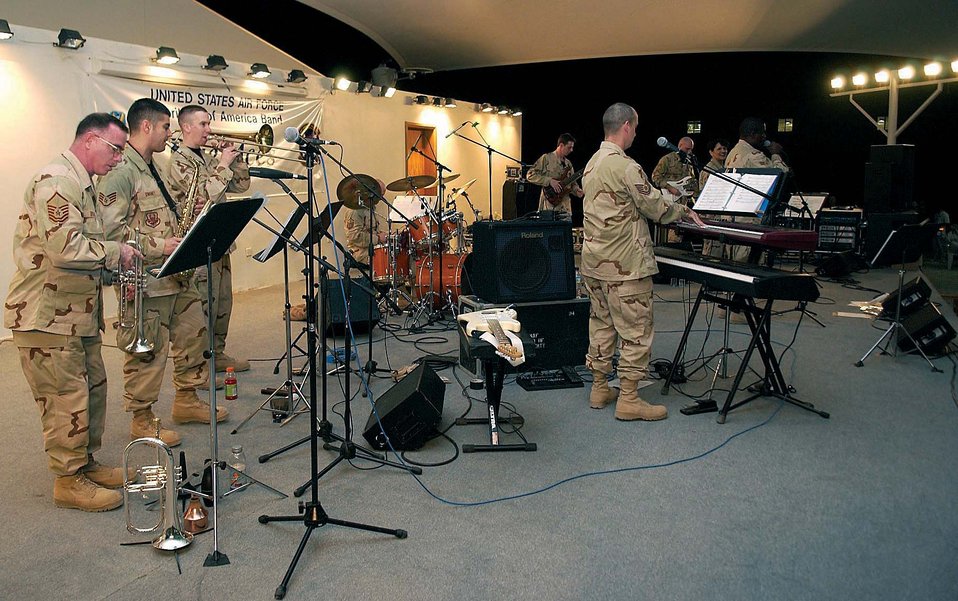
Blue Aces entertain deployed troops

SOUTHWEST ASIA -- The nine-person Blue Aces, part of the Air Force's Heritage of America Band based at Langley Air Force Base, Va., performs at a forward-deployed location. They perform pieces from Top 40 to classic rock to country, and are scheduled to visit seven bases around U.S. Central Command's area of responsibility during their air and space expeditionary force deployment.